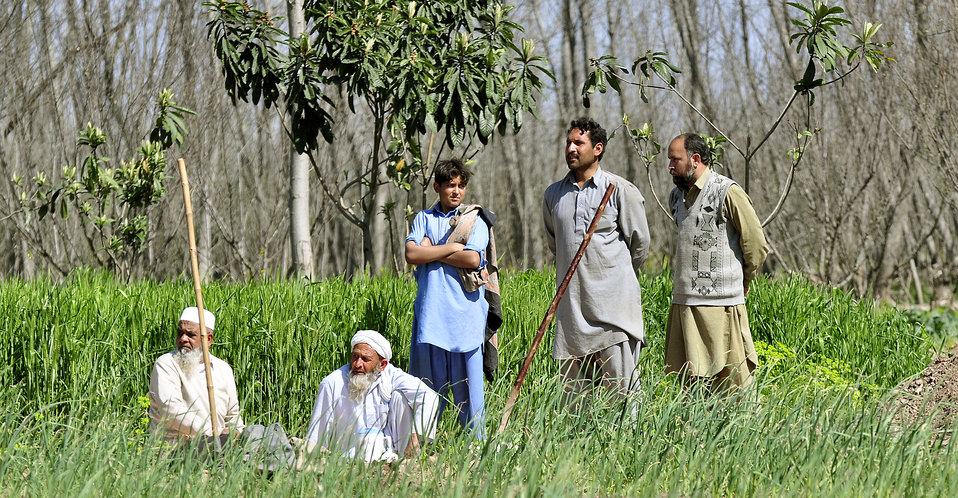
2011 March: USAID's Agricultural Recovery Program in 22 districts of Khyber Pakhtunkhwa, Punjab and Balochistan is an excellent example of the impact US development assistance can have. We have helped more than 500,000 farmers salvage the winter planting season and livestock after the floods. As a result, wheat farmers have nearly doubled their harvests. More than 5 million people have benefited. These photos show progress of the USAID Agricultural Recovery Project in Khyber Pakhtunkhwa.